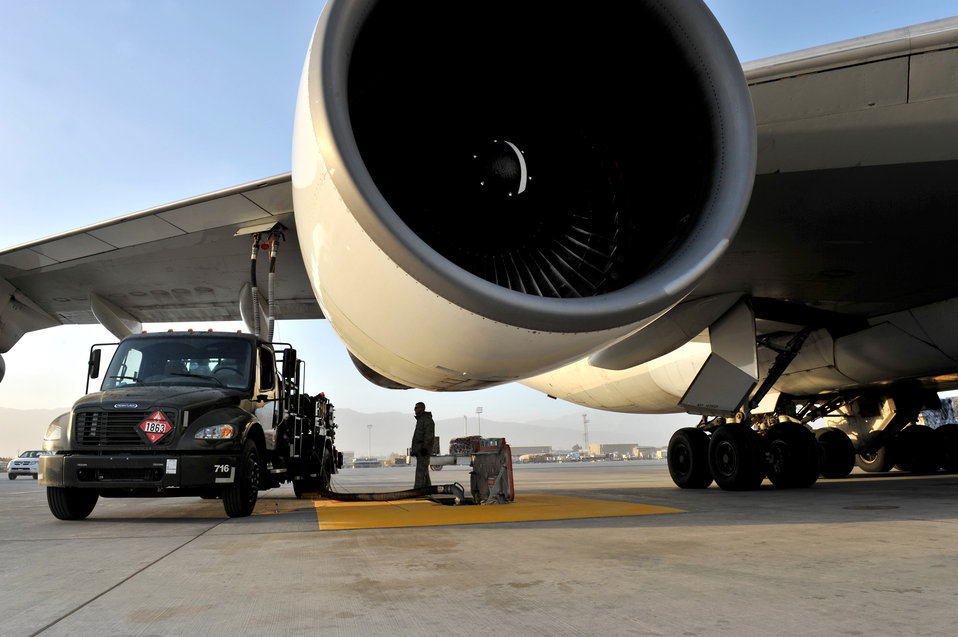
New fuel system enhances Bagram's refueling capabilities

Tech. Sgt. Jeremy Whitworth watches the pressure gauge while refueling an aircraft with the new R-12 hydrant-servicing vehicle Dec. 21, 2010, at Bagram Airfield, Afghanistan. The squadron recently received five HSVs and completed the new Type III constant pressure system became fully operational and will significantly increase refueling capabilities. Sergeant Whitworth is the 455th Expeditionary Logistics Readiness Squadron section chief of fuels refueling.